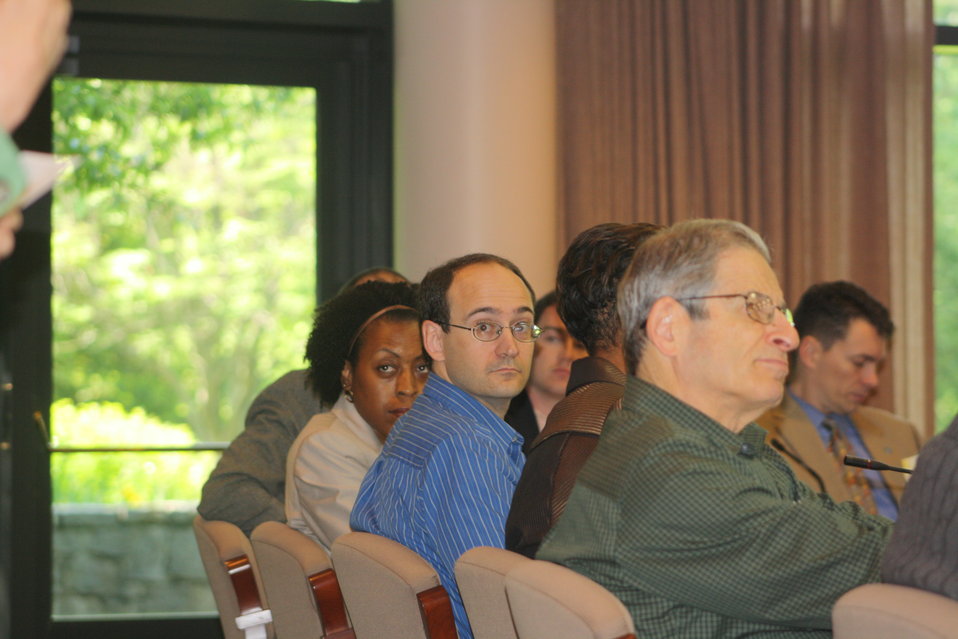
Faith-Based and Neighborhood Partnership launch at Atlanta's Carter Center